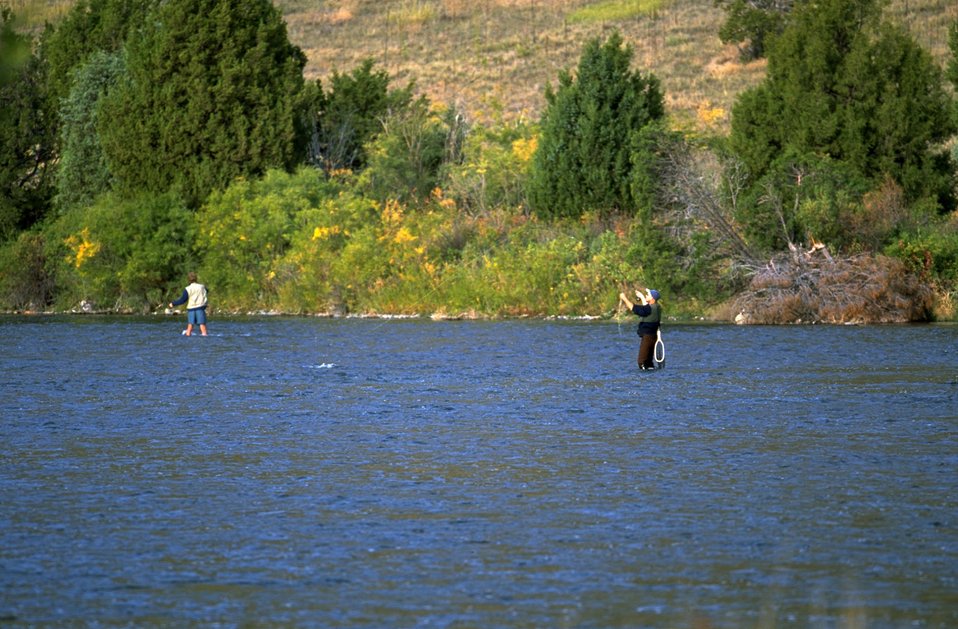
Fishermen on the Madison